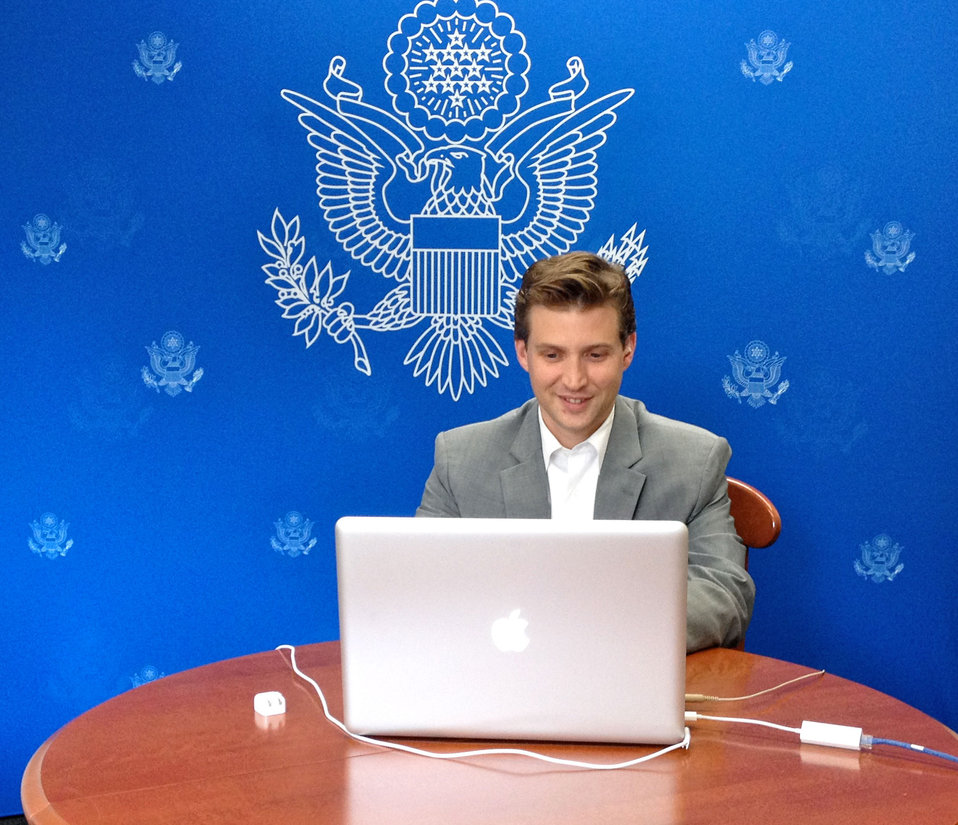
Senior Advisor Alec Ross Participates in a Google Hangout

Alec Ross, Senior Advisor for Innovation in the Office of Secretary of State Hillary Clinton, participates in a Google Hangout on HuffPost Live on October 23, 2012.